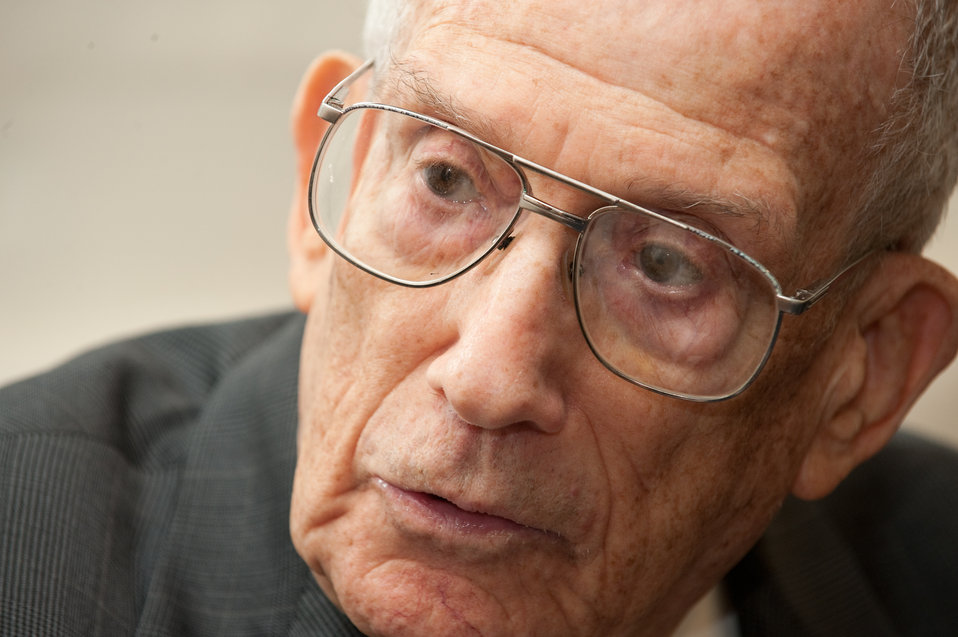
Air Force Week New York City Public Service Award

Mr. Chester Burger talks about his experiences that lead to his being awarded the Air Force Distinguished Public Service Award on Aug. 24, 2010, while aboard the USS Intrepid. Mr. Chester Burger served as an Air Force advocate under the Public Affairs Advisory Group in New York City for more than 15 years. He worked to bring awareness to the contributions of servicemen in NYC. His award ceremony followed the Air Force Week New York City proclamation ceremony on the USS Intrepid. The event at the Intrepid Sea, Air & Space Museum was highlighted by a six-ship flyover by the USAF Thunderbirds. The Honorable Michael Donley, Secretary of the Air Force attended, along with General Raymond Johns, Commander of Air Mobility Command. The Police Commissioner of the City of New York, the Honorable Raymond Kelly, represented NYC. Mr. Greg Kelly of